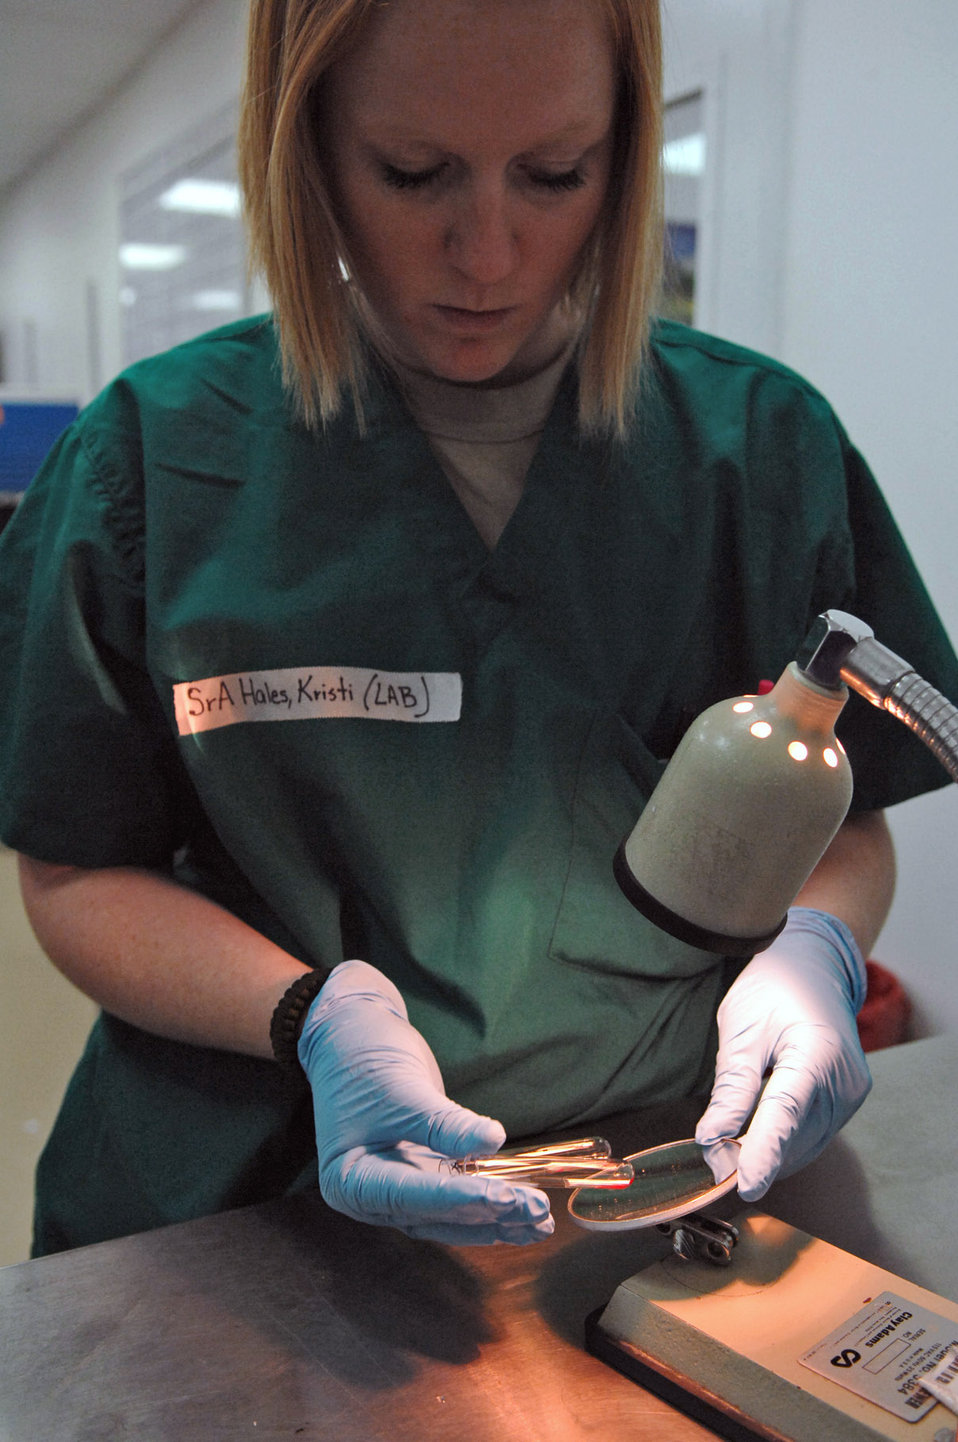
Blood test

Senior Airman Kristi Hales examines small vials of blood after they have been put through a spinning process to determine the blood type June 5 at Balad Air Base, Iraq. Before giving blood products to trauma patients, a blood type must be established to ensure the wrong type is not given. Airman Hales is a 332nd Expeditionary Medical Support Squadron lab technician deployed from Lackland Air Force Base, Texas.